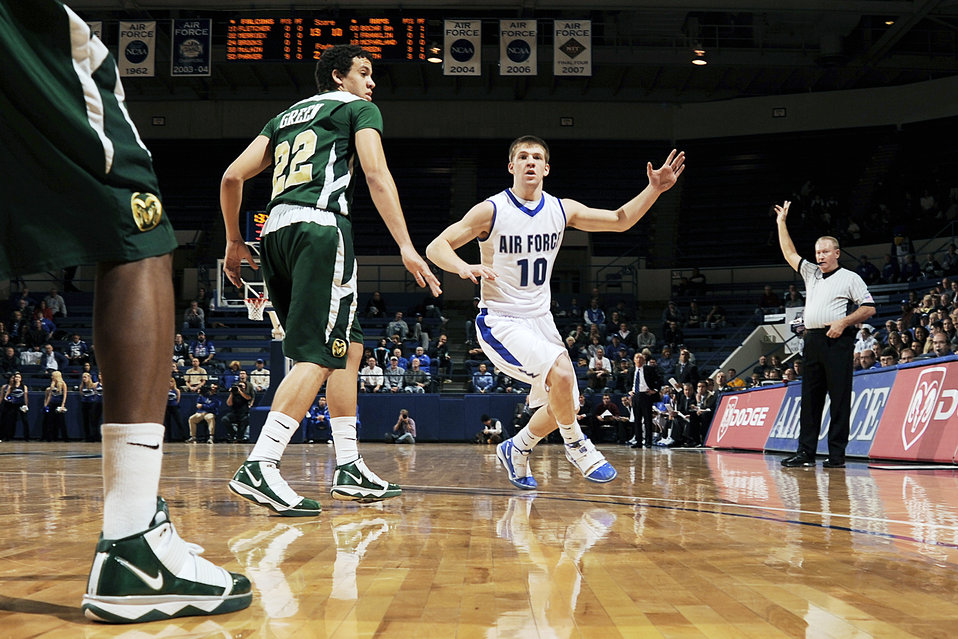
Colorado State beat Falcons

Falcon freshman guard Todd Fletcher seeks an inbound pass as the Colorado State University Rams beat Air Force 51-47 at the U.S. Air Force Academy's Clune Arena Feb 9, 2010. The Falcons are 9-14 overall and 1-9 in the Mountain West Conference.